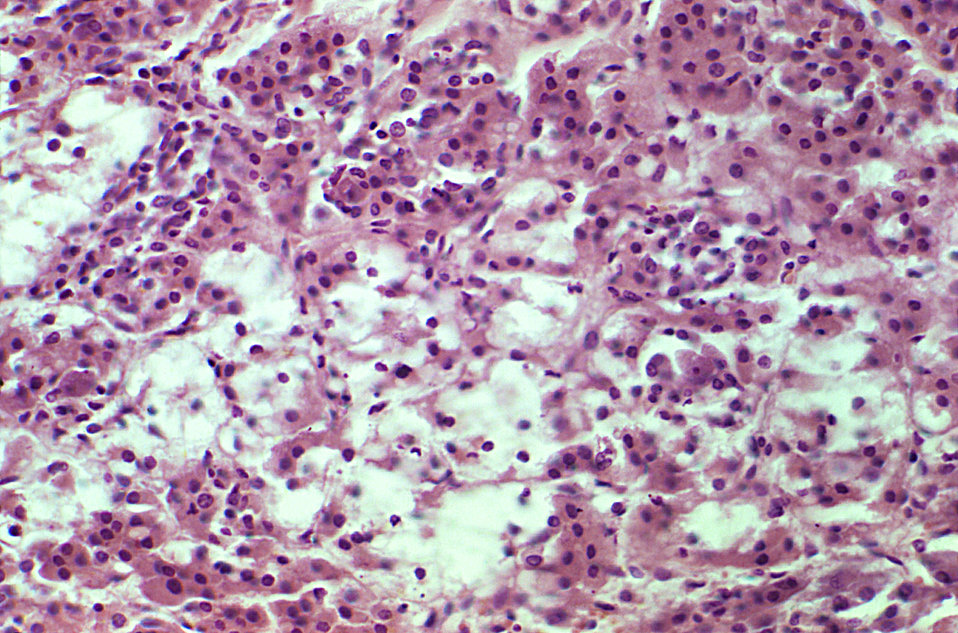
Magnified 250X, this photomicrograph revealed the presence of Acanthamoeba sp. parasitic microorganisms, which were found in a specimen of human H&E-stained adrenal gland tissue.